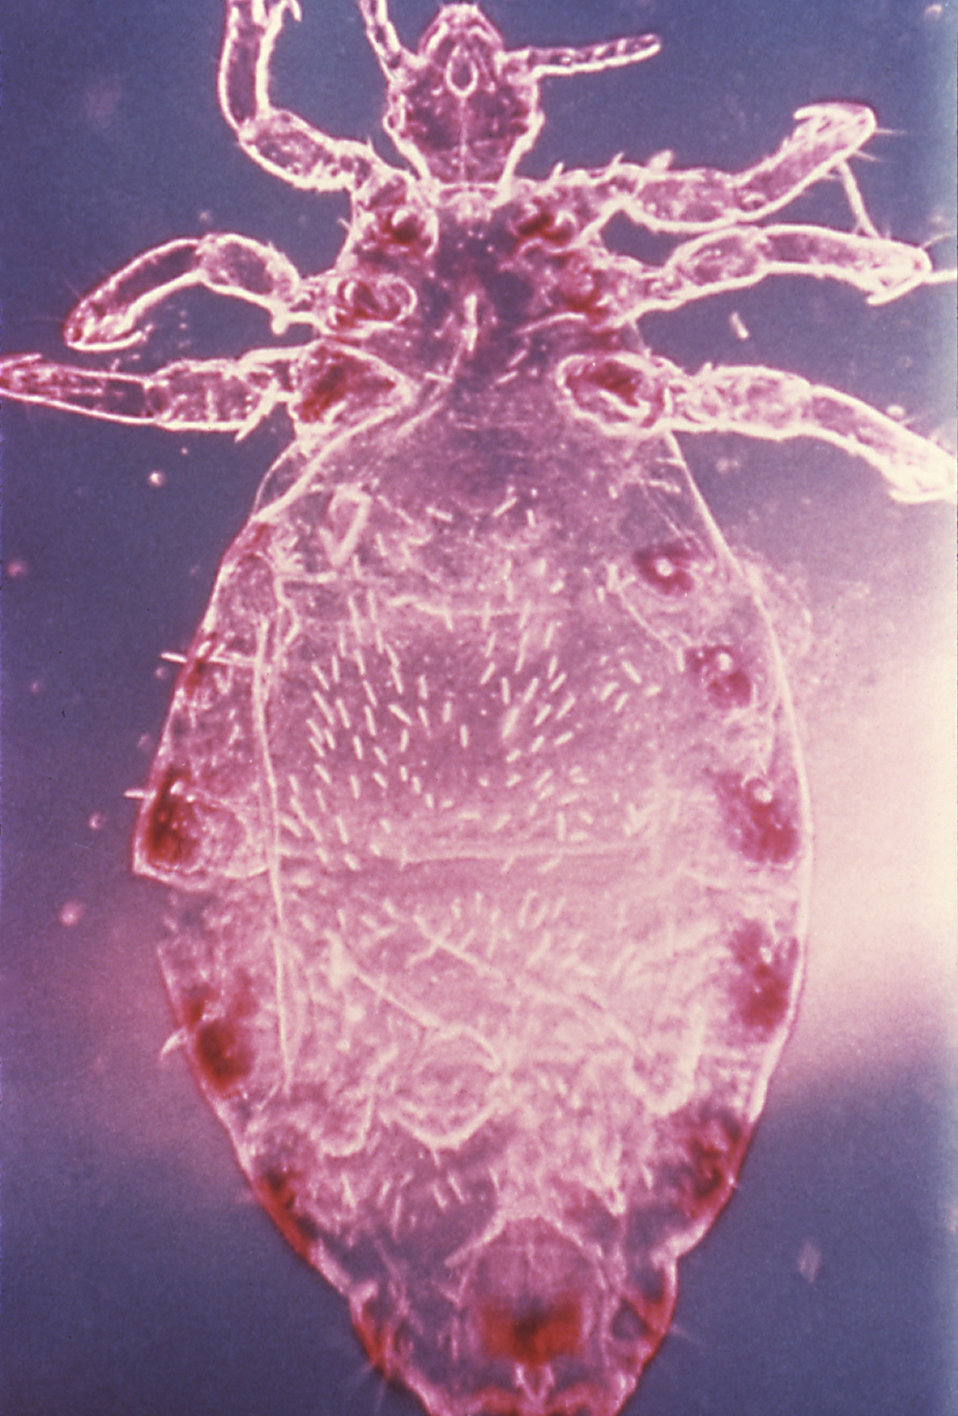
This is an enlarged view of a male head louse, Pediculus humanus var. capitis.